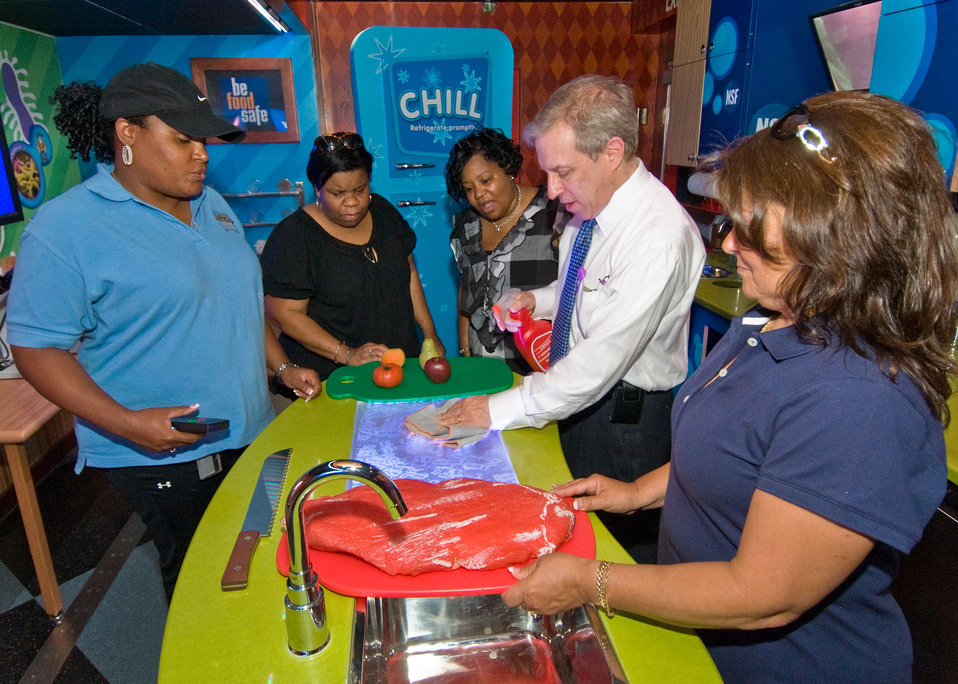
From Left: Lieutenant Commander Carol McAlman, United States Public Health Service, Michelle Goodman, FSIS, Vickie Clark, FSIS, Deputy Undersecretary Food Safety, Food Safety Inspection Service Jerold Mande and Mary Harris, FSIS, Food Safety Education Staff. LCDR McAlman watches as Deputy Secretary Mande, follows “Clean,” the first procedure in the mantra, “Clean, Separate, Cook and Chill” taught by the Food Safety Inspection Service, Food Safety Education Staff in the Food Safety Discovery Zone. The Food Safety Discovery Zone was an exhibit at the annual Food Safety Inspection Service “Unity Day” held at the U.S. Department of Agriculture George Washington Carver Center in Beltsville, Maryland on Wednesday, May 26. The Food Safety Discovery Zone is a mobile education center for the FSIS Food Safety Education Staff that travels to schools and civic functions teaching safe food handling. The United States Public Health Service and United States Department of Agriculture Food Safety Education Service cooperate in the operation of the Food Safety Discovery Zone. USDA Photo 10di1376-49.